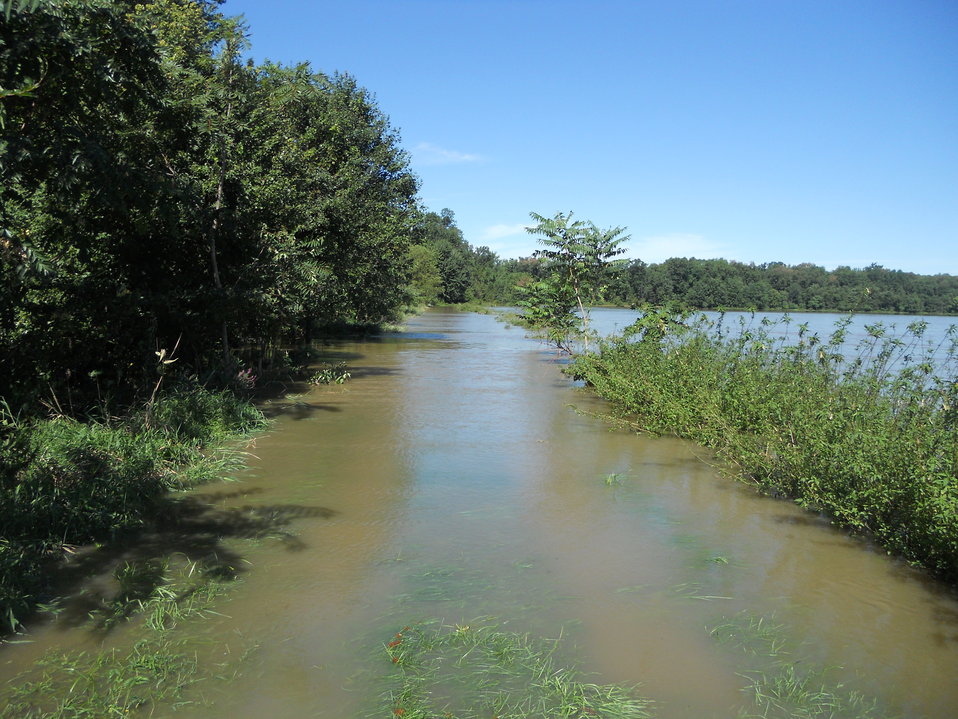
Hurricane Damage at Wallkill River National Wildlife Refuge August 30, 2011

Flooding at Liberty Loop Trail and impoundments, Sussex, NJ.